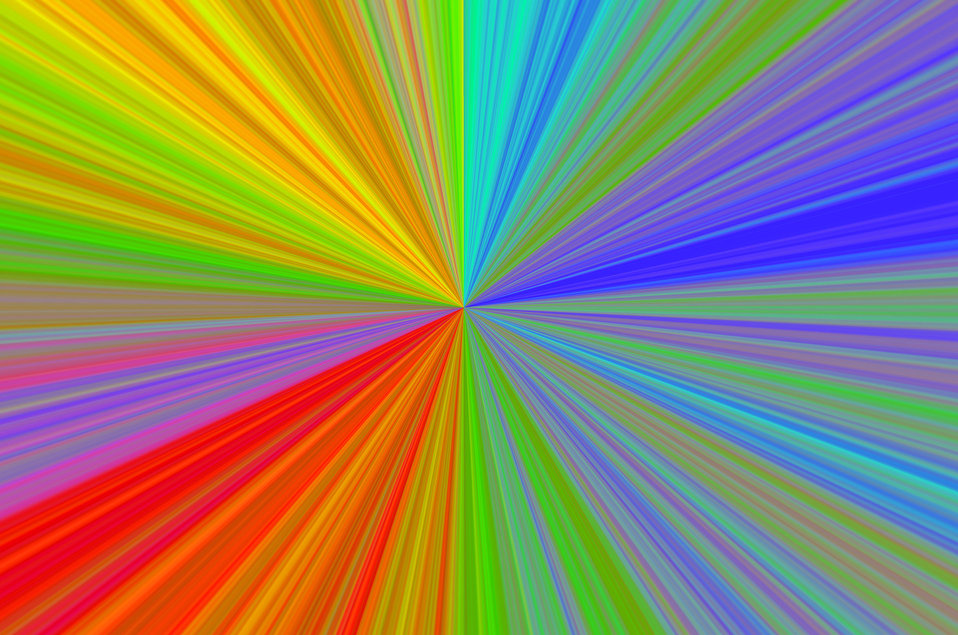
Background

Abstract colored background.